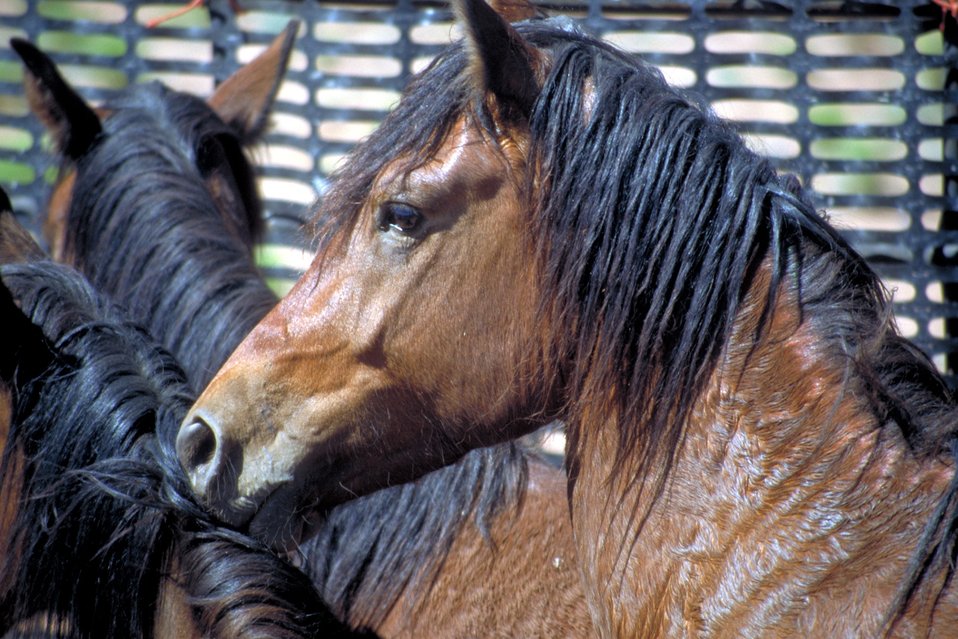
Wild Horse gather, San Rafael Swell.